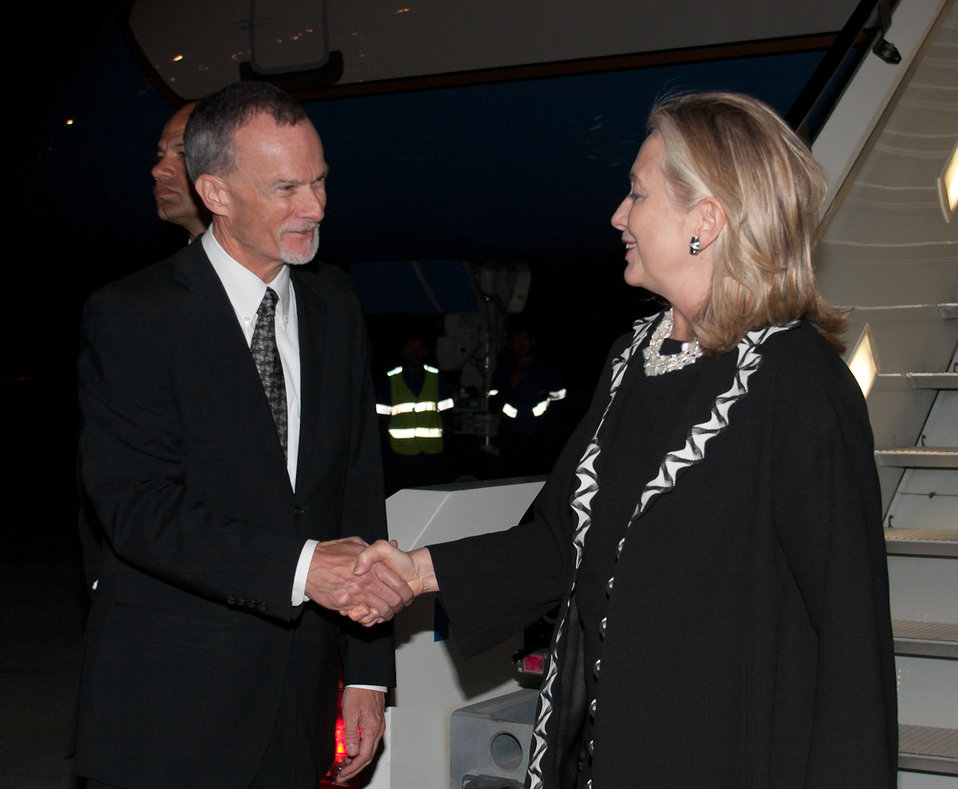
Secretary Clinton Is Greeted By Ambassador Gross

U.S. Secretary of State Hillary Rodham Clinton is greeted by U.S. Ambassador to Tajikistan Kenneth E. Gross, Jr., upon her arrival to Dushanbe, Tajikistan, on October 21, 2011.